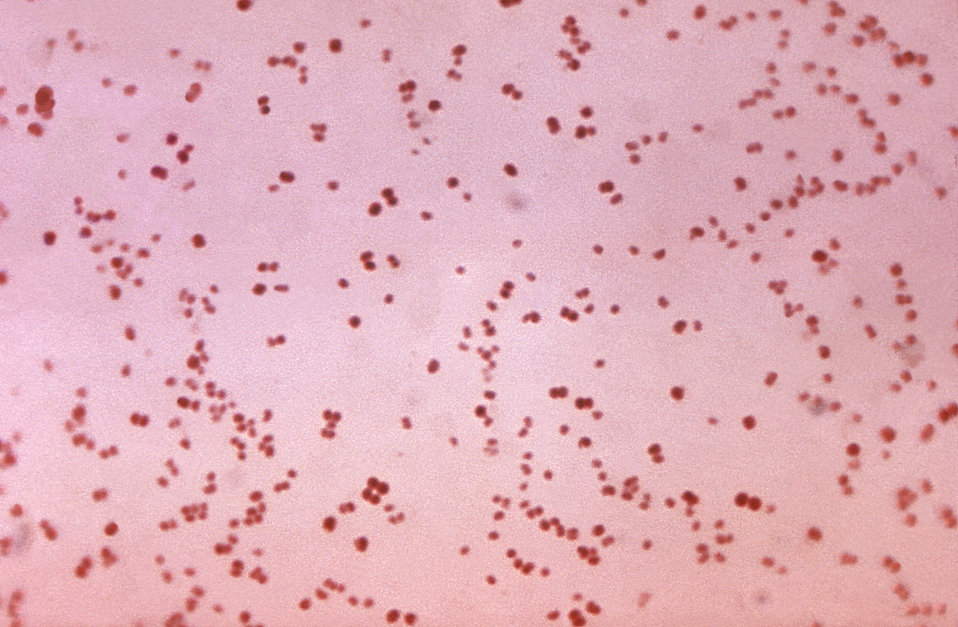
Taken from a culture, this Gram-stained photomicrograph revealed the presence of numerous gram-negative diplococcal bacteria that were identified as Neisseria gonorrhoea.